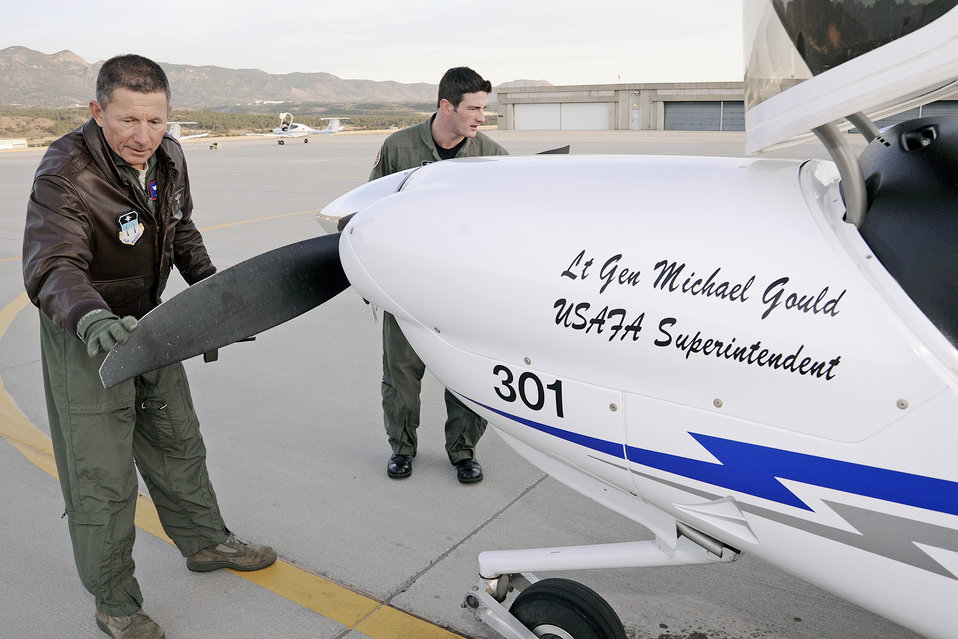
T-52A training flight

Air Force Academy Superintendent Lt. Gen. Mike Gould and Cadet 1st Class Luke Hyder perform a pre-flight inspection on a T-52A April 15, 2010, on the airfield at the U.S. Air Force Academy, Colo. The aircraft is the newest addition to the cadet flight training fleet.